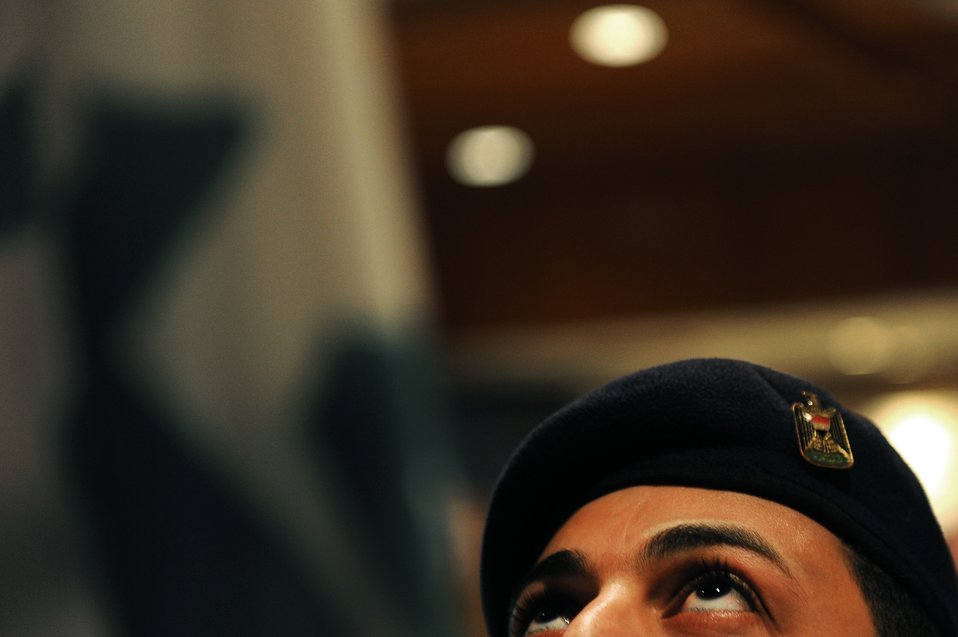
Guardian of the colors

An Iraqi air force airman practices presenting the colors Sept. 29, 2011, at Sather Air Base, Iraq, during joint honor guard training with Air Force honor guard members. Two Iraqi airmen are learning to be ceremonial guardians of the colors in preparation for the Brig. Gen. Anthony Rock’s promotion to major general Oct. 4, 2011. Rock is the 321st Air Expeditionary Wing commander.